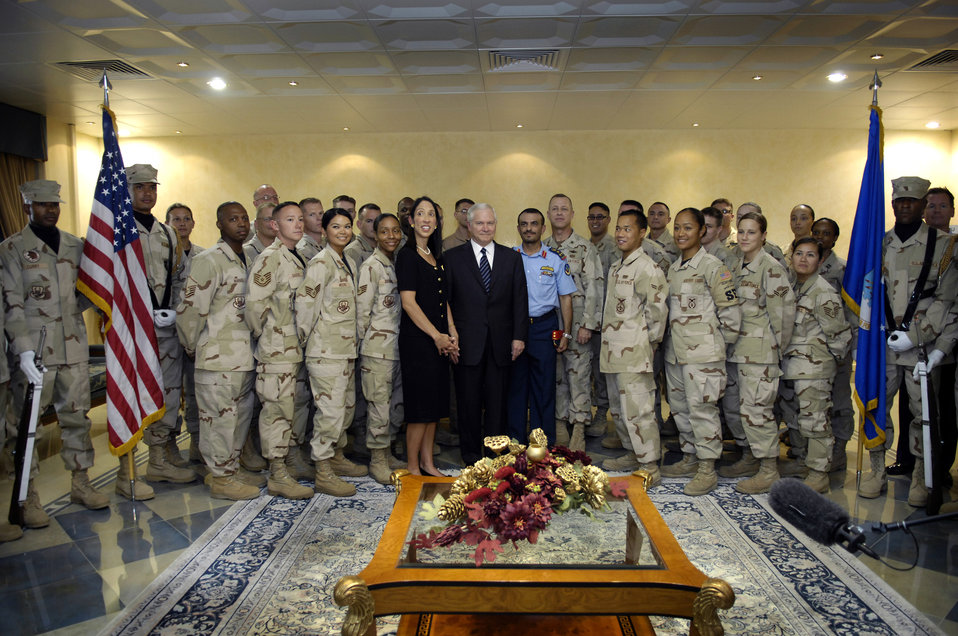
Top-level meeting

Secretary of Defense Robert M. Gates takes a group photo with Airmen in Southwest Asia Aug. 2. Secretary Gates described his four-day trip to the Middle East as